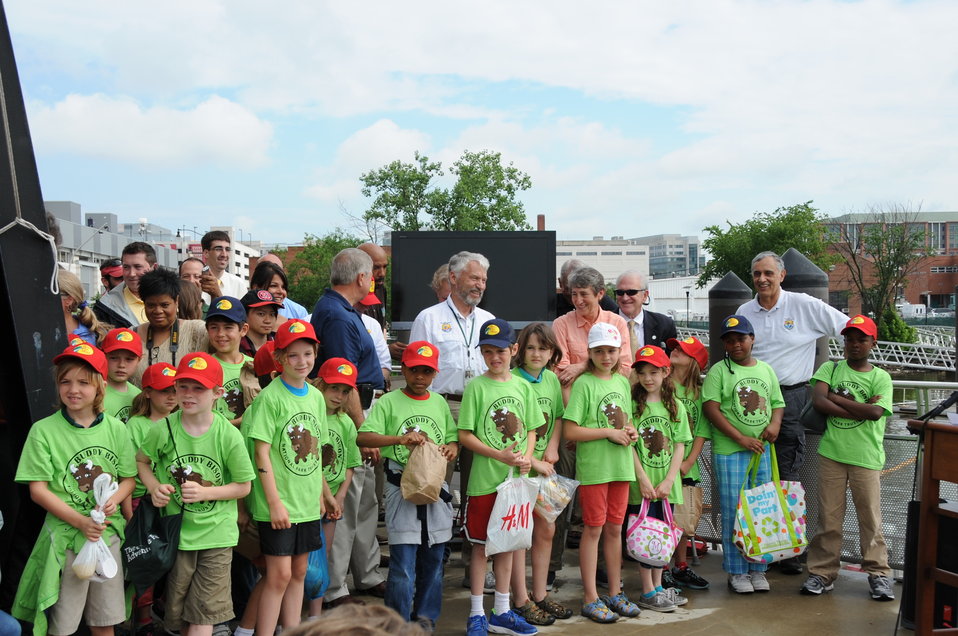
2013 National Fishing and Boating Week

Local students prepare to enjoy fishing at the annual kick-off of National Fishing and Boating Week on the Anacostia River in Washington D.C.